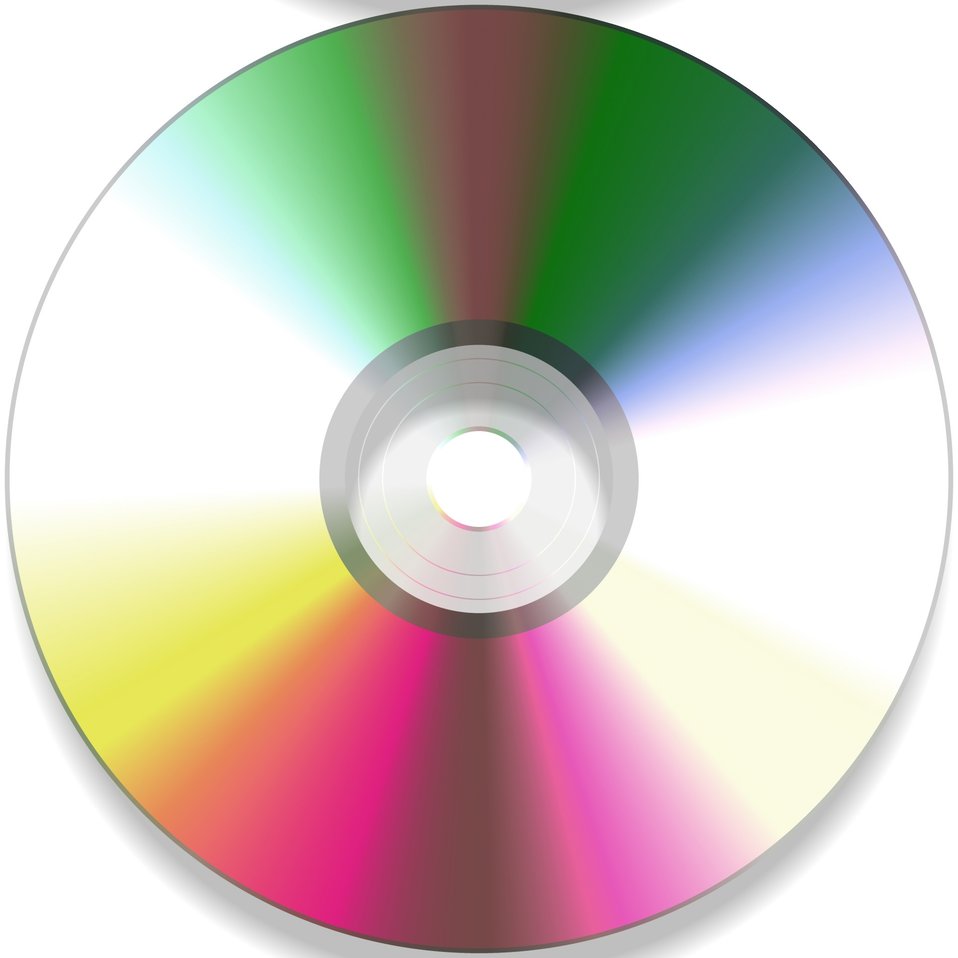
Cd image 2

Cd image isolated on white background.